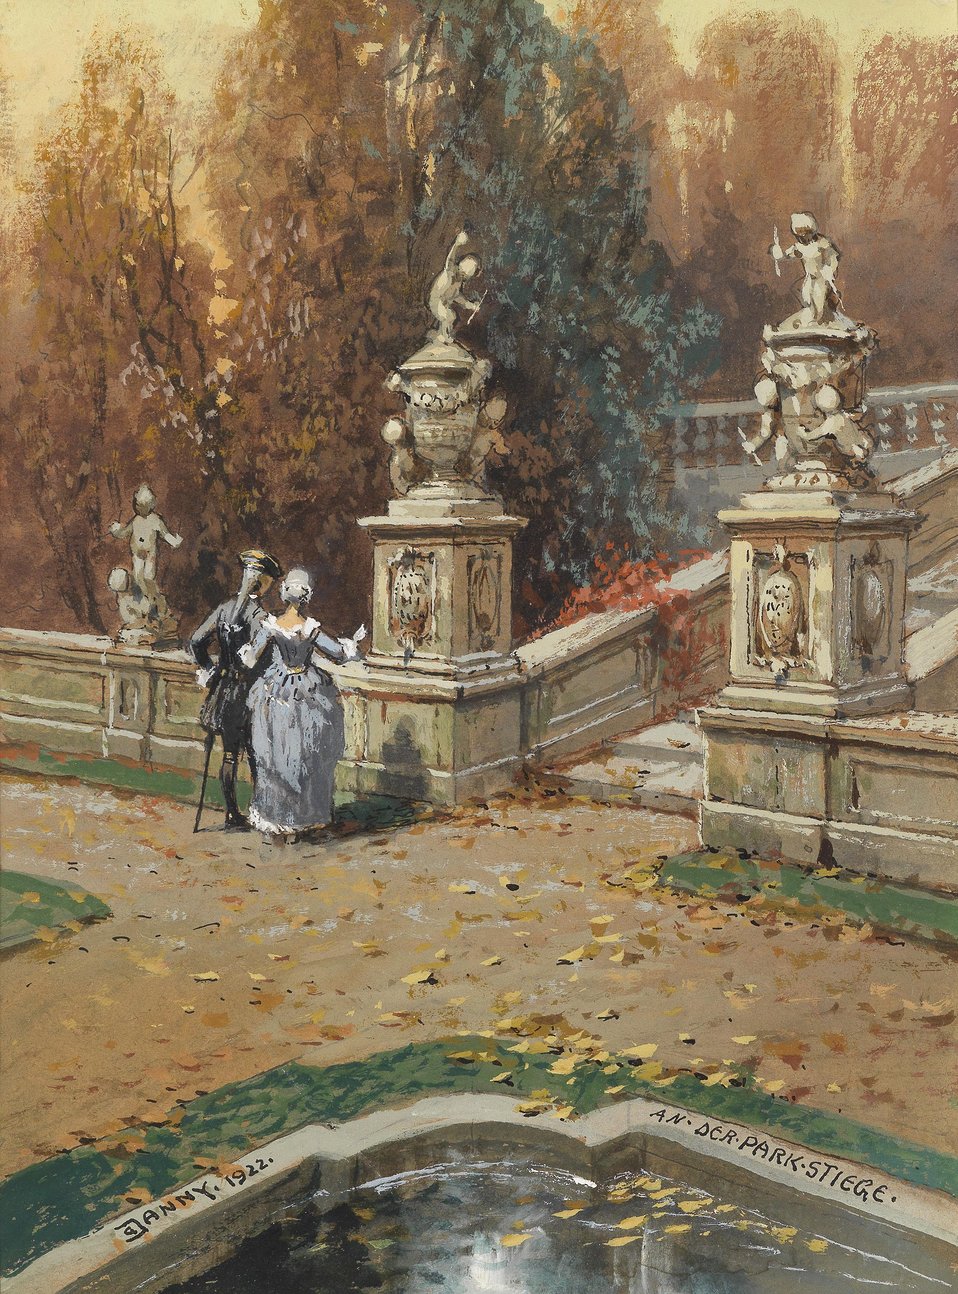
Deutsch: 'An der Parkstiege', betitelt, signiert und datiert G. Janny 1922, Aquarell auf Papier, 24 x 18 cm 20th-century depiction of 18th-century couple strolling through gardens